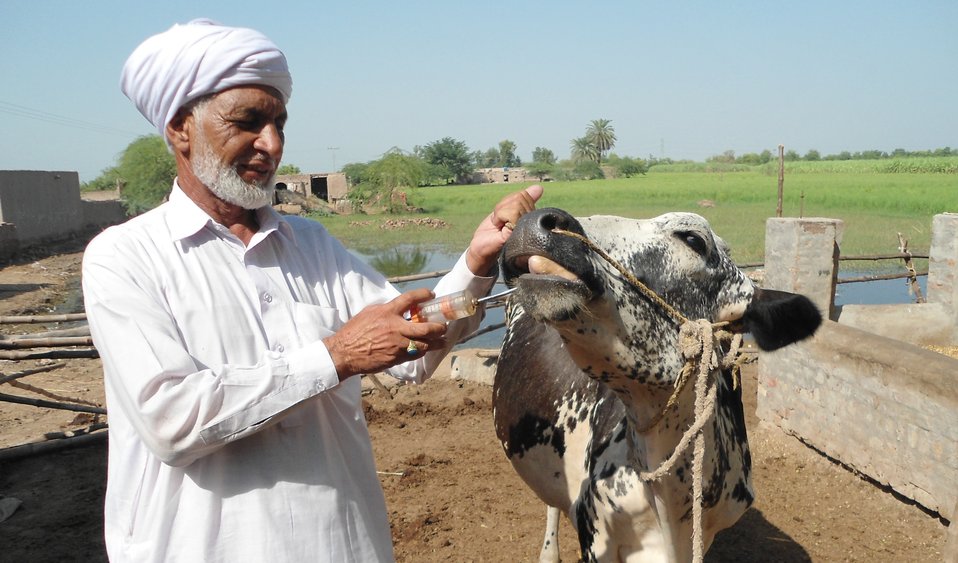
Practicing deworming, a useful skill he learned in the course.